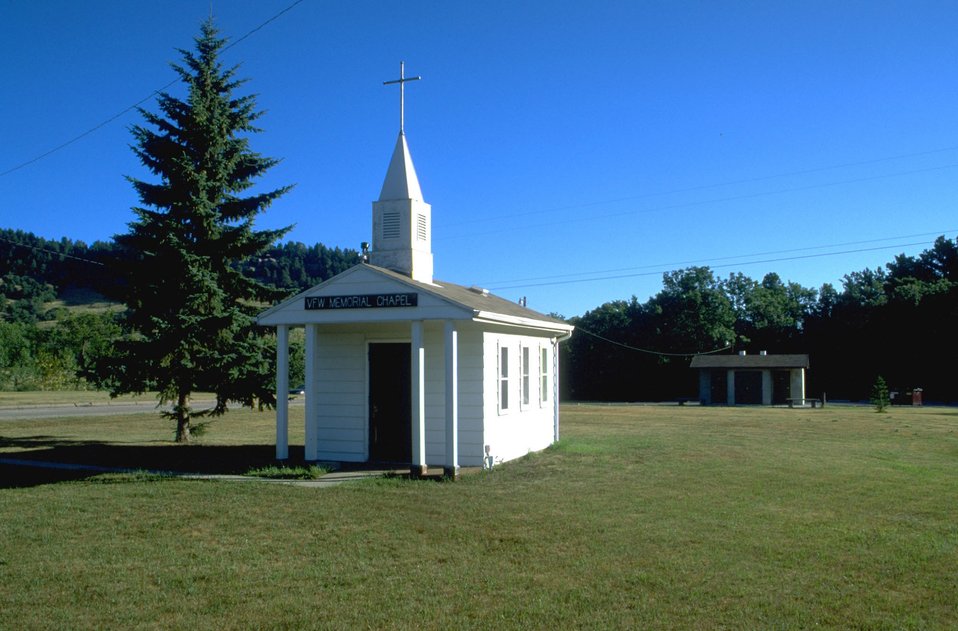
VFW Memorial Chapel looking northeast